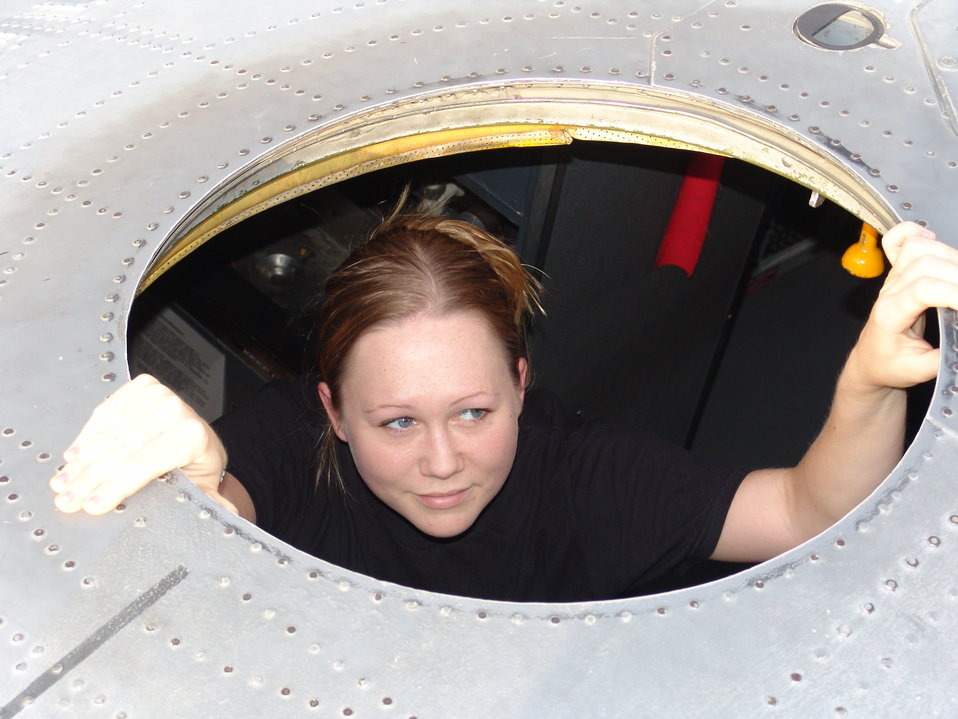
Inspecting the 'hole' aircraft

SOUTHWEST ASIA -- Staff Sgt. Emily Frances climbs through the top access hatch of an EC-130H Compass Call at a forward-deployed location to inspect the top surface of the aircraft for leaks and damage. She is an integrated flight controls specialist with the 43rd Expeditionary Electronic Combat Squadron and is deployed from Davis-Monthan Air Force Base, Ariz.